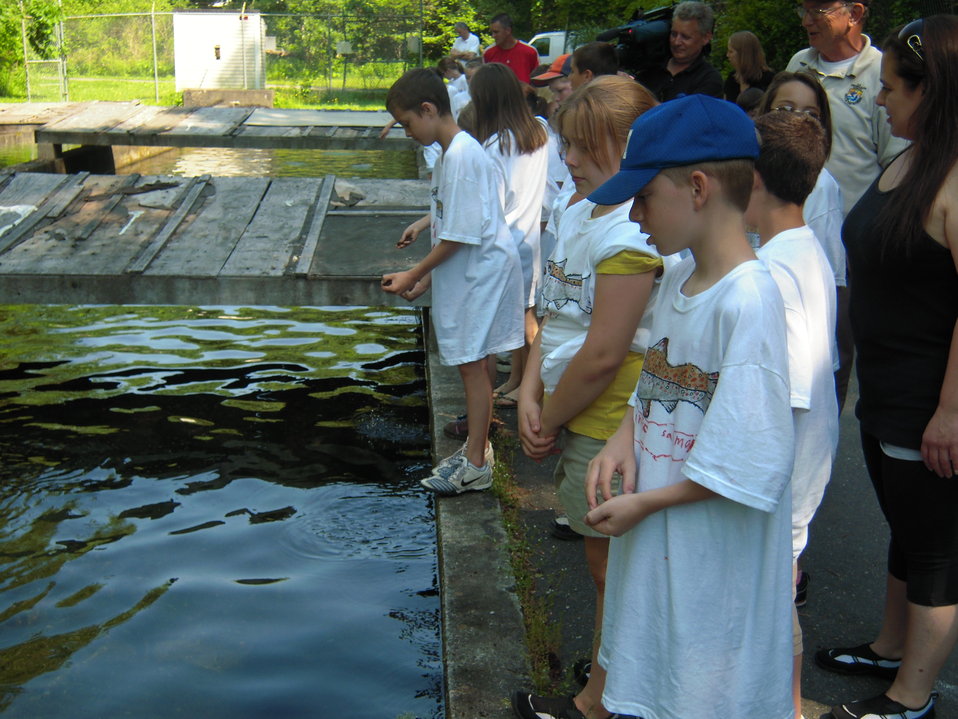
Feeding the fish